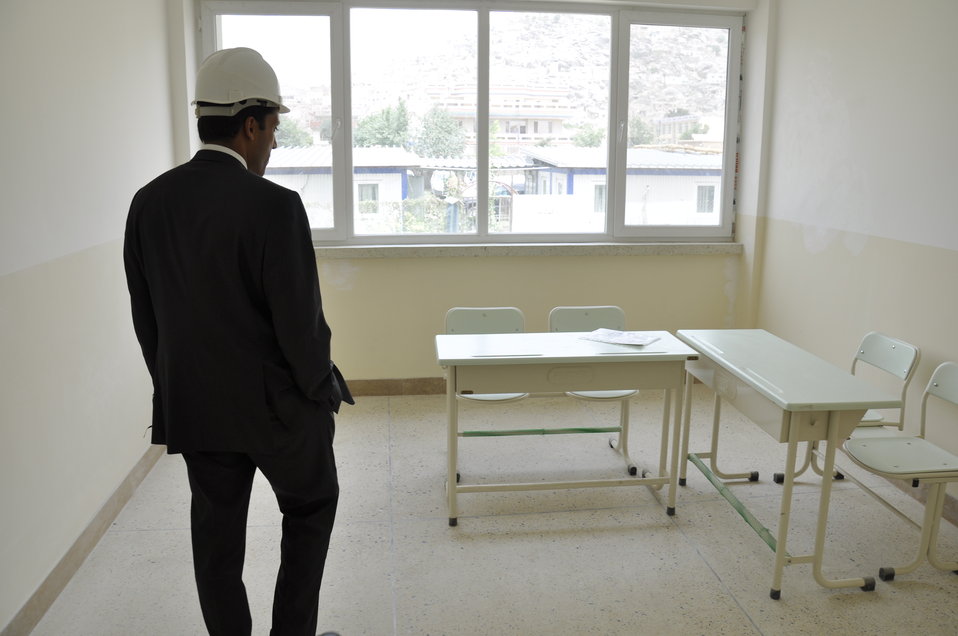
Ghazni High School in Kabul